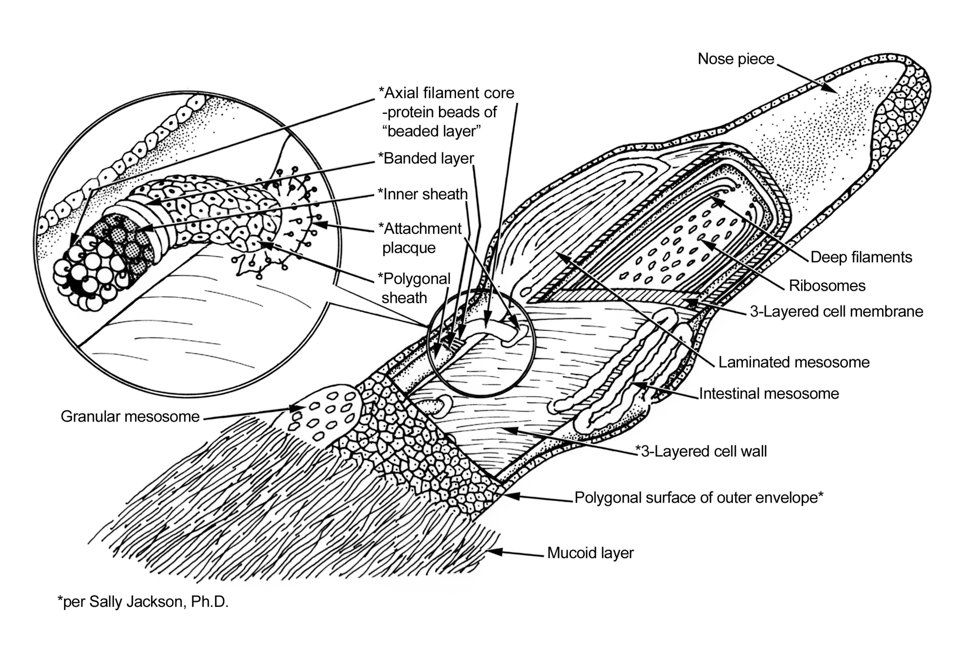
A schematic illustration of one end of a Treponema pallidum bacterium.